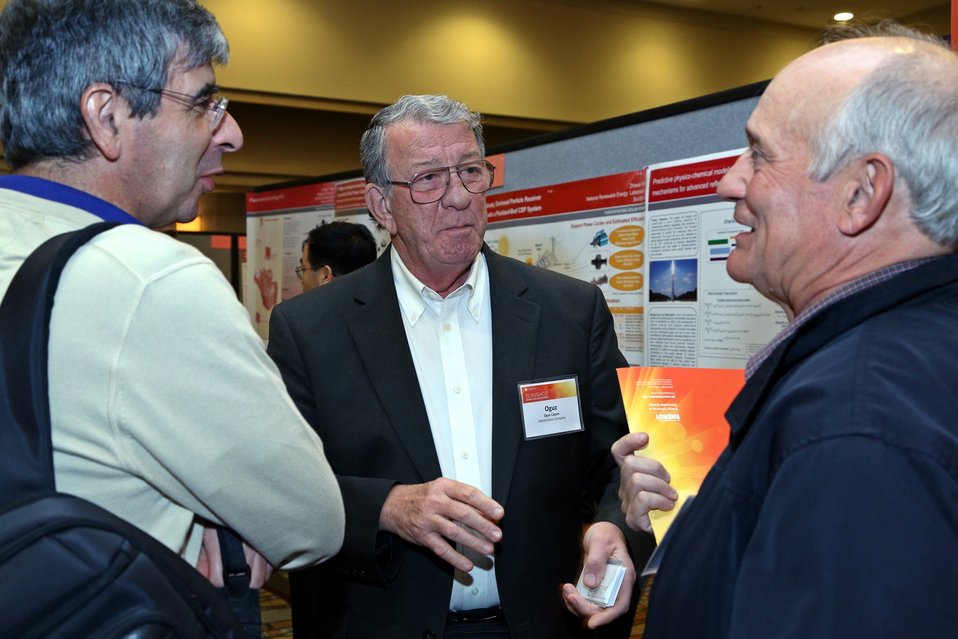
Tech Forum 27

Attendees and awardees connect at the Tech Forum.